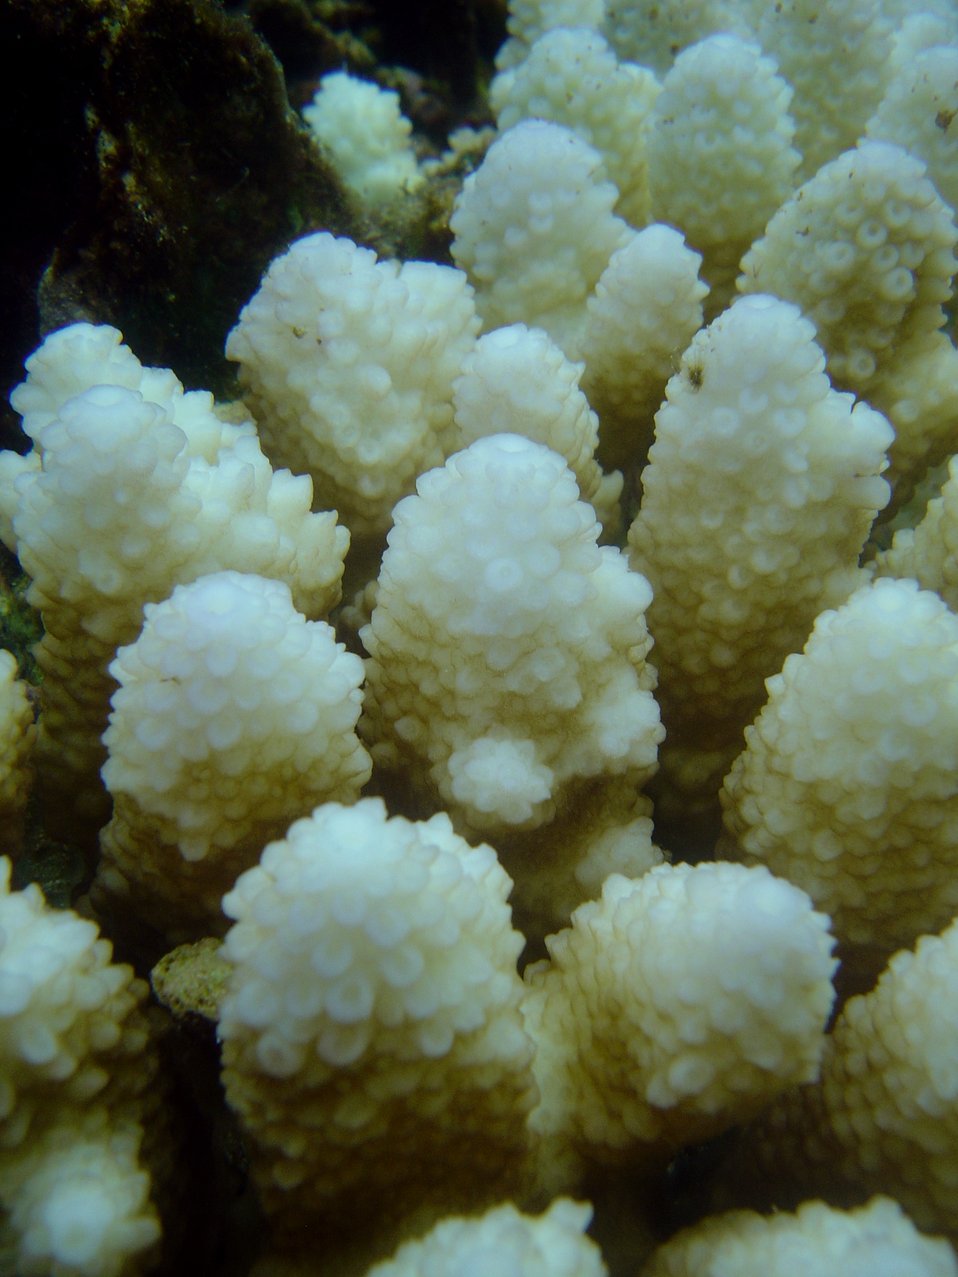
Coral bleaching